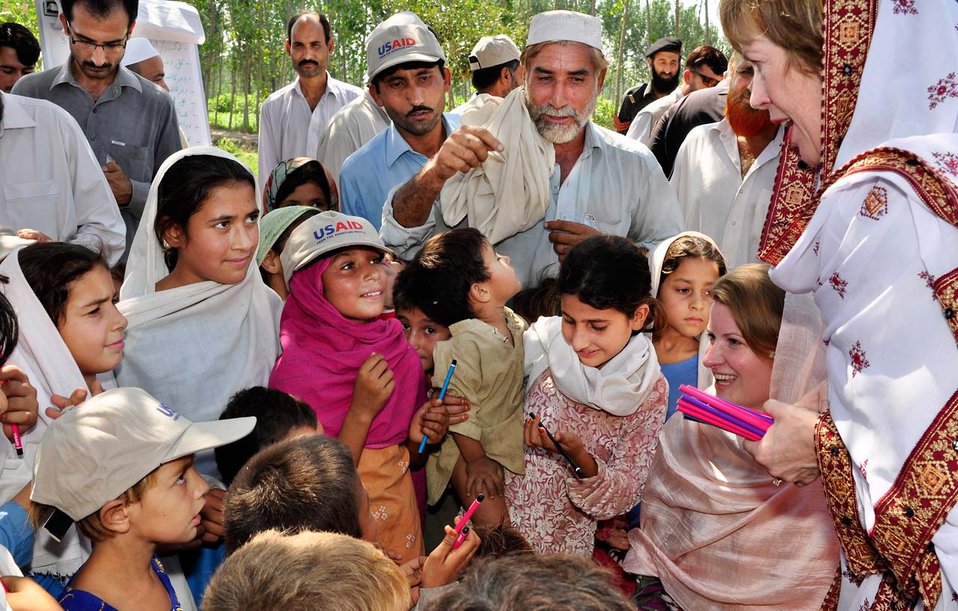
Dr. Marilyn Wyatt's Visit to the Flood-affected Farming Communities in Khyber Pakhtunkhwa